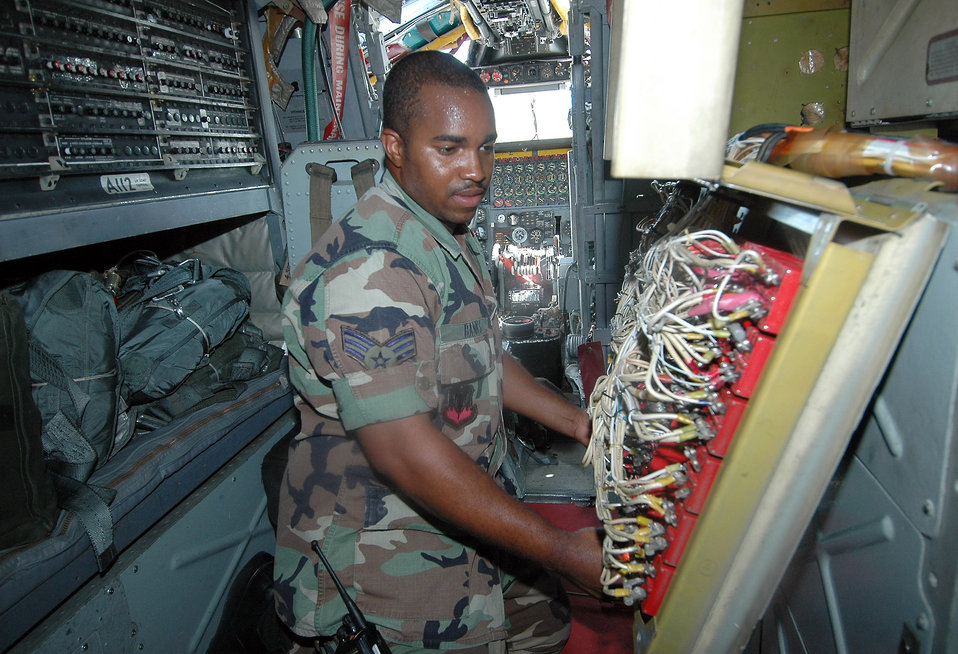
Inside the Stratofortress

OPERATION ENDURING FREEDOM (AFPN) -- Senior Airman Kevin Banks inspects a fuse panel on a B-52 Stratofortress during routine maintenance. The B-52s join other U.S. and coalition aircraft over Afghanistan, providing close-air support in support of Operation Enduring Freedom. Airman Banks is deployed from Barksdale Air Force Base, La. He is an electrical-environmental journeyman assigned to the 40th Expeditionary Maintenance Squadron.